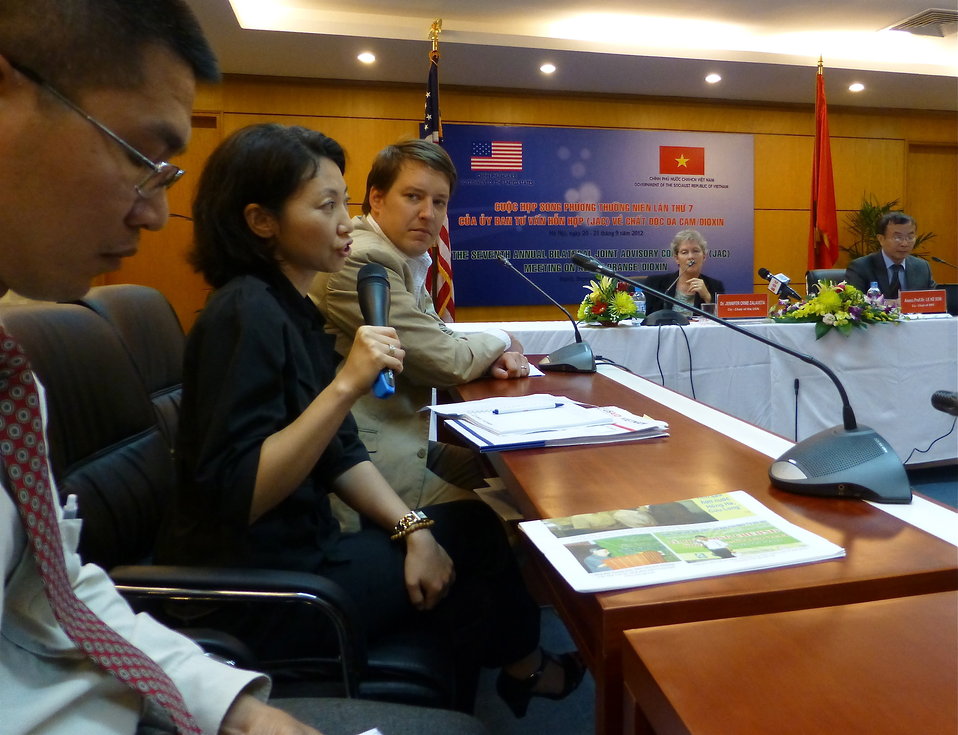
Press Conference at the 7th Joint Advisory Committee Meeting in Hanoi

Hanoi, September 21, 2012